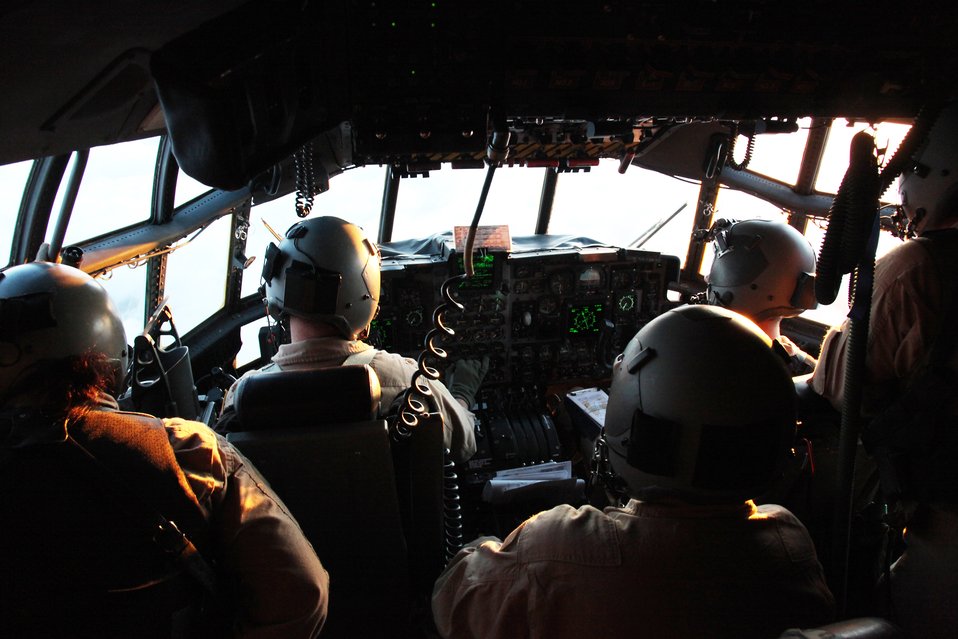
AC-130 crew provides close support

The flight crew aboard an AC-130 Gunship heads back to Bagram Airfield, Afghanistan, after completing a mission March 3, 2010, in support of ground troops conducting operations in Afghanistan's Parwan province.